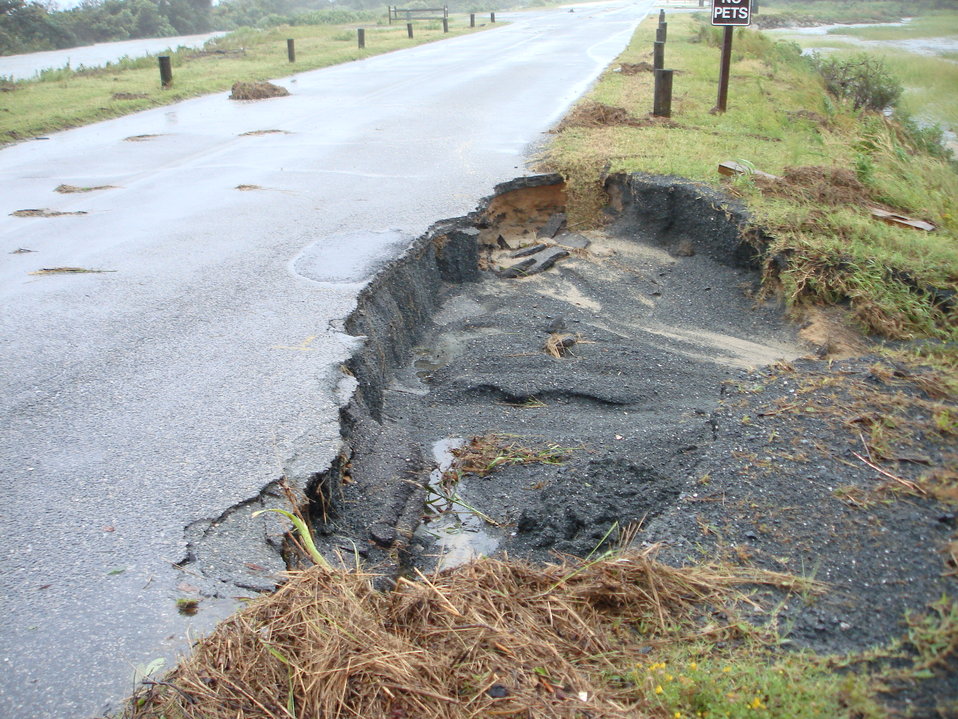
Erosion damage caused by Hurricane Irene on Beach Road at Chincoteague National Wildlife Refuge in Virginia.